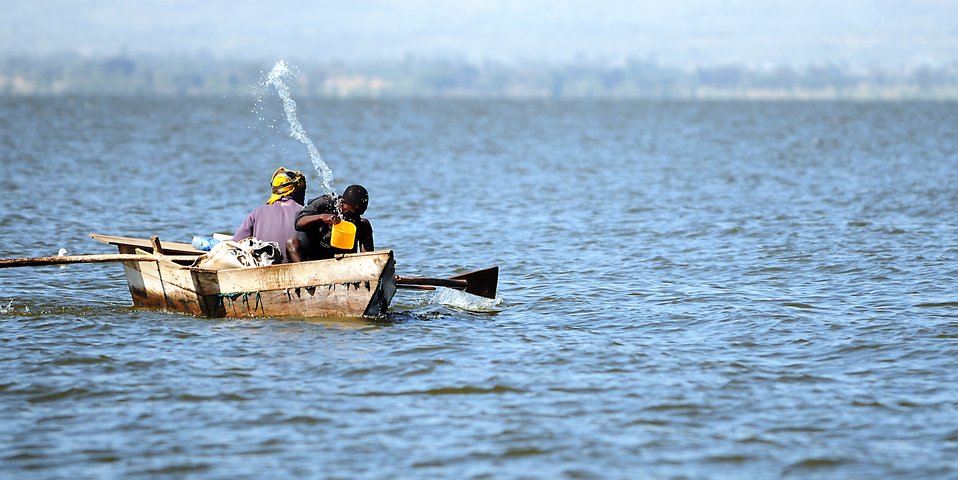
144 hours in Ethiopia: Africa remembers

A fisherman bails water from a handmade boat while fishing at a lake in Hawassa, Ethiopia, Dec. 8, 2011. According to Addisu Wedhao, the attache to the U.S. embassy in Ethiopia, many of the tools and devices used to hunt, fish and grow crops in Ethiopia are made by hand.